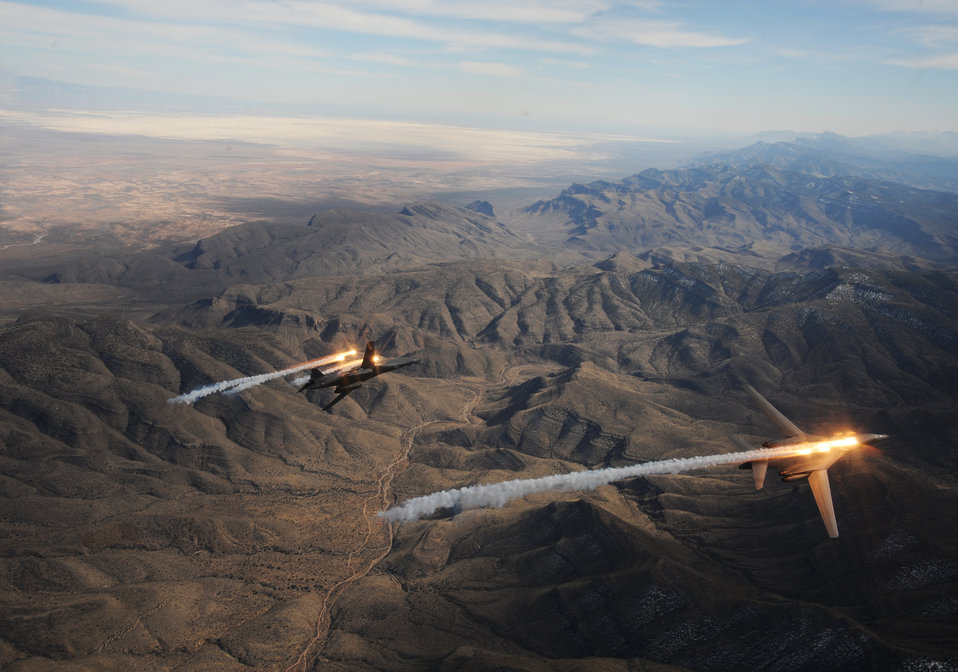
B1-B Training Mission

A two-ship formation of B-1B Lancers assigned to the 28th Bomb Squadron, Dyess Air Force Base, Texas, release chaff and flares while maneuvering over New Mexico during a training mission Feb. 24, 2010. Dyess celebrates the 25th anniversary of the first B-1B bomber arriving at the base.